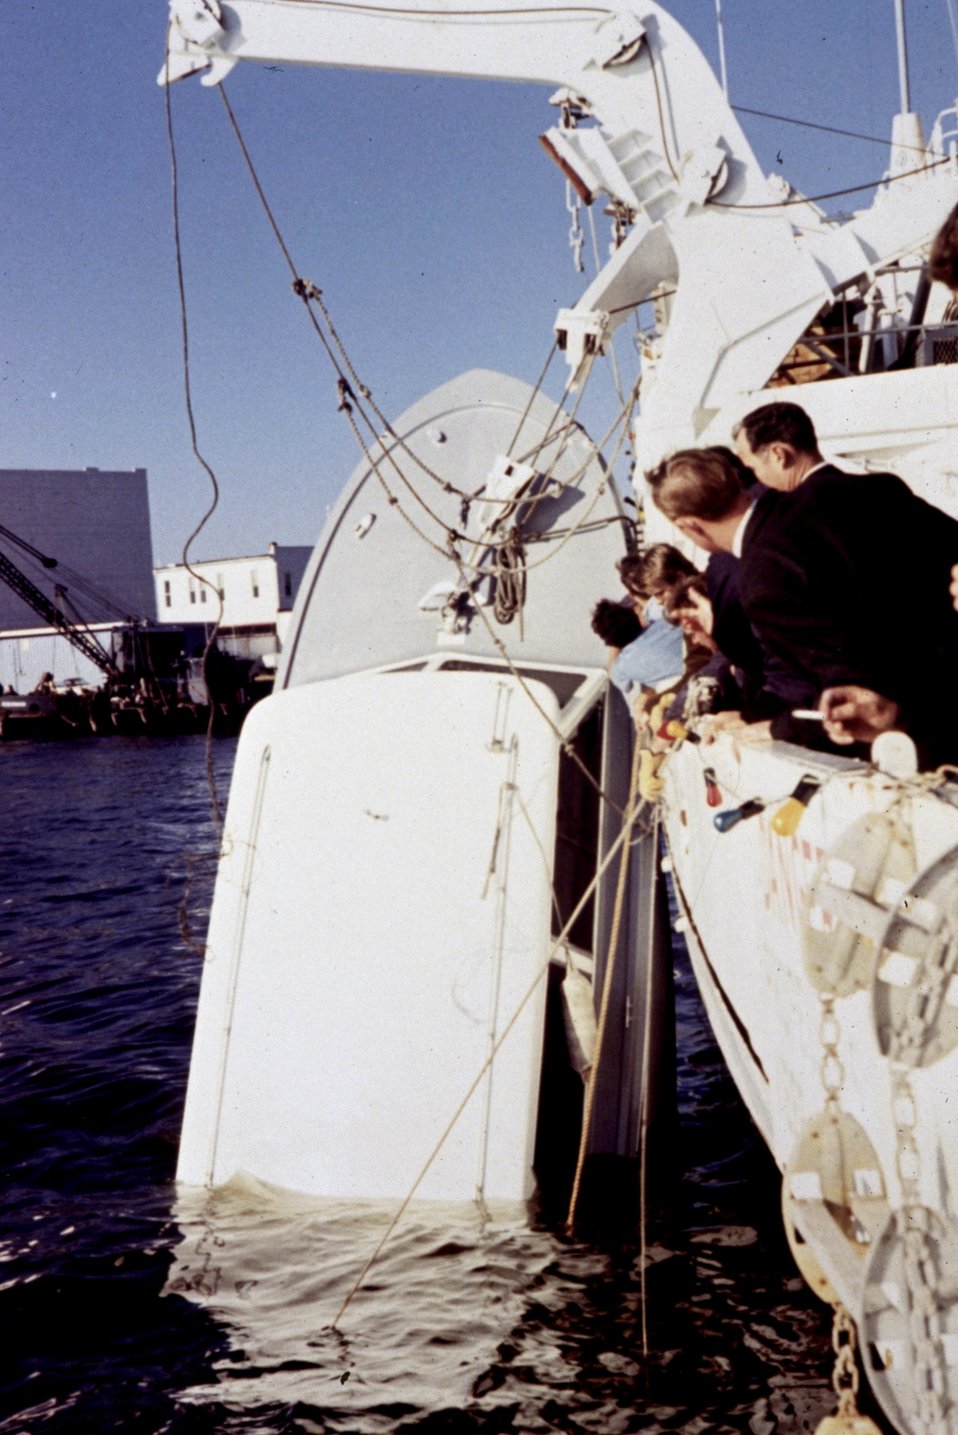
Plastic Pig following stern cable breaking. #2 of photo sequence.